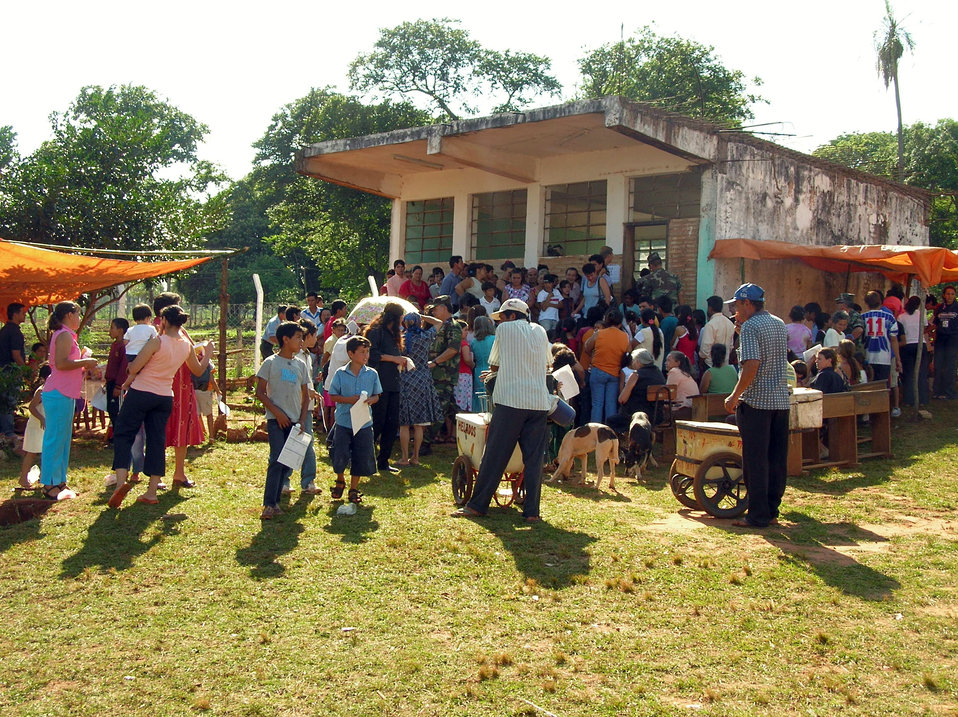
Medical Group members return from humanitarian mission

PARAGUAY (AFPN) -- Hundreds of people in a Paraguayan village wait in lines for a chance to be seen by a doctor. The real-world humanitarian aid mission helped several thousand people. Air Force doctors, dentists and optometrists worked with Paraguayan doctors for this mission. Ten members of the 9th Medical Group at Beale Air Force Base, Calif., recently returned from Paraguay after participating in a 15-day medical readiness training exercise.